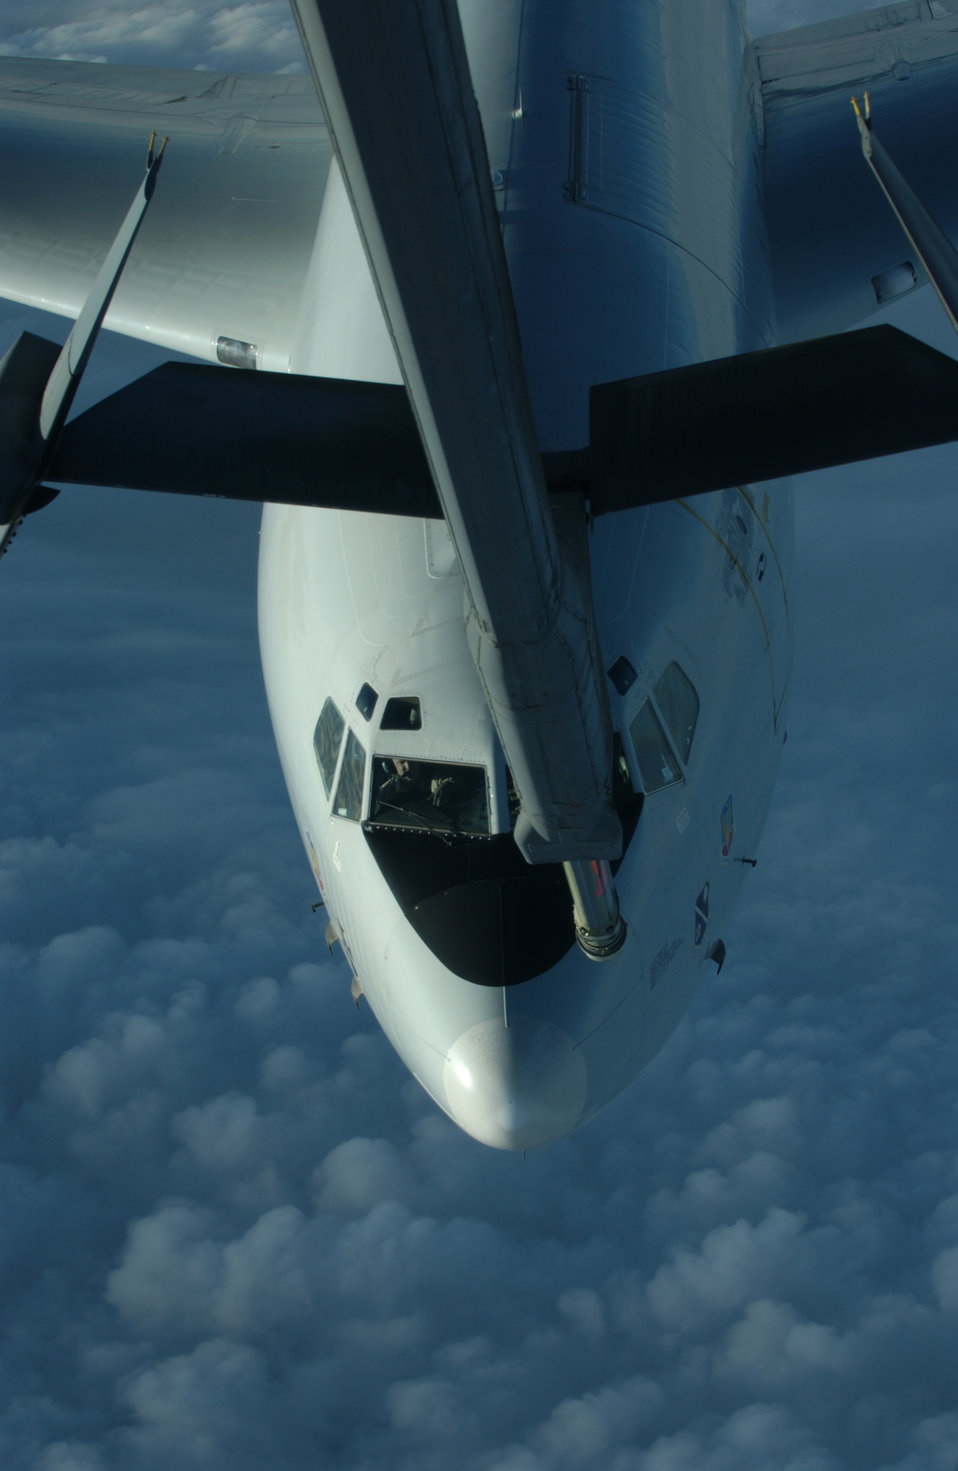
Christmas refuel

OVER IRAQ -- An E-8C Joint Surveillance Target Attack Radar System aircraft receives fuel from a KC-10A Extender Dec. 25. The tanker assigned to the 908th Expeditionary Aerial Refueling Squadron.